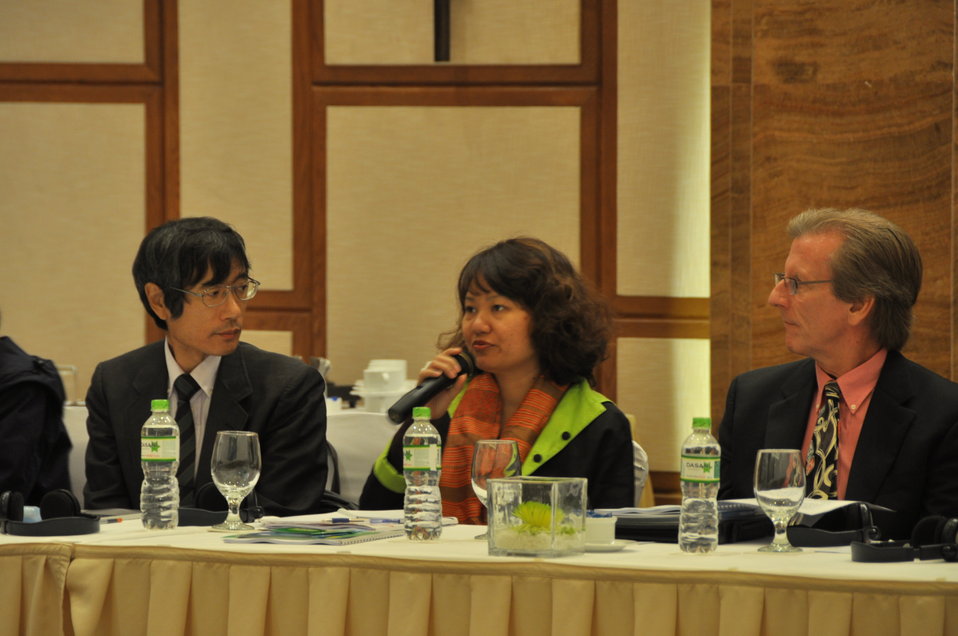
Van Le, USAID Disabilities Program

Danang, December 4, 2013.